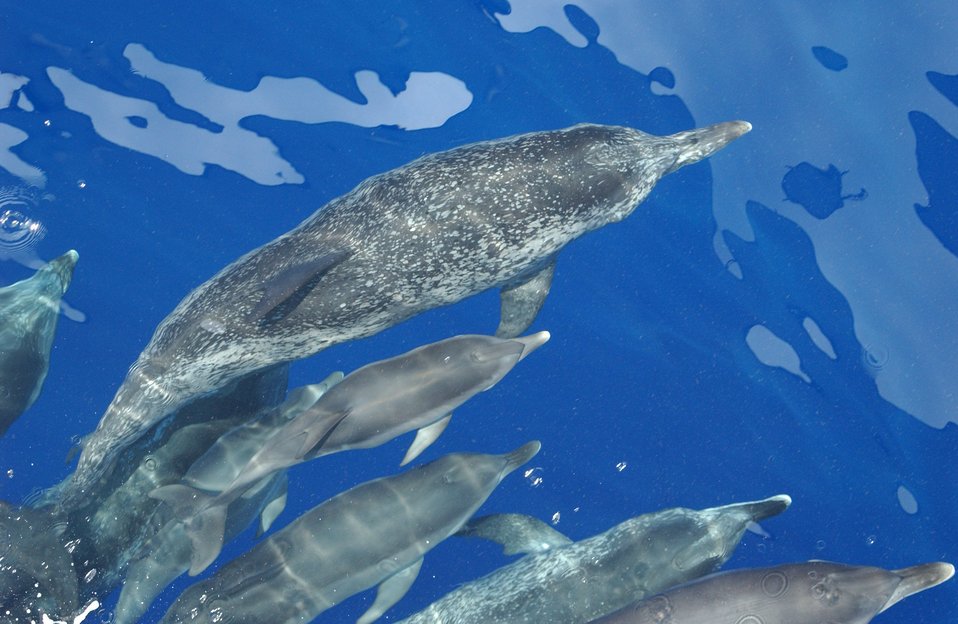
Atlantic spotted dolphin